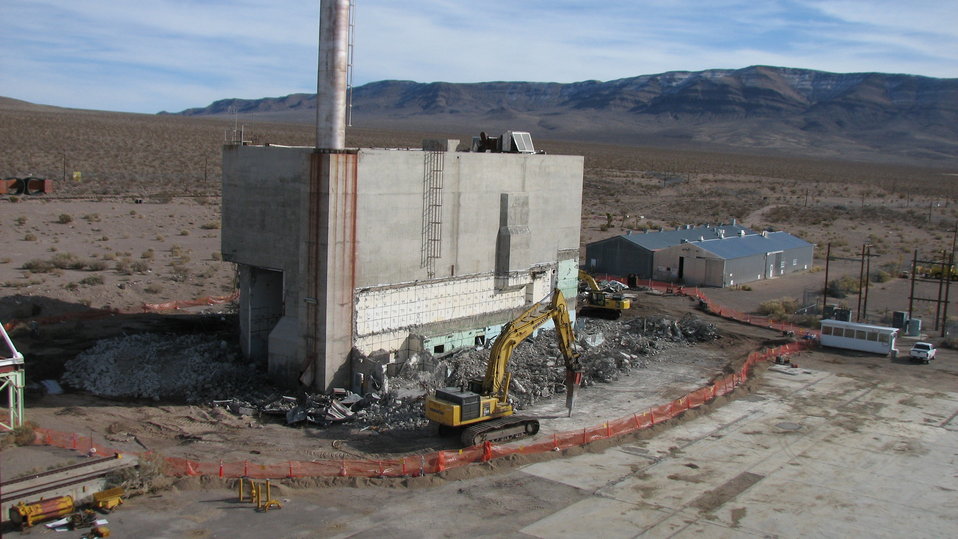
Cleanup of Historic Nuclear Rocket Development Facility

BOOM! That’s the sound of stimulus funding at work on the Nevada Test Site (NTS) demolishing the Reactor Maintenance, Assembly, and Disassembly (R-MAD) building. Decontamination and decommissioning (D&D) of R-MAD moved up in priority with the availability of American Recovery and Reinvestment Act funding and, in turn, this complex work generated more than 15 full-time positions.